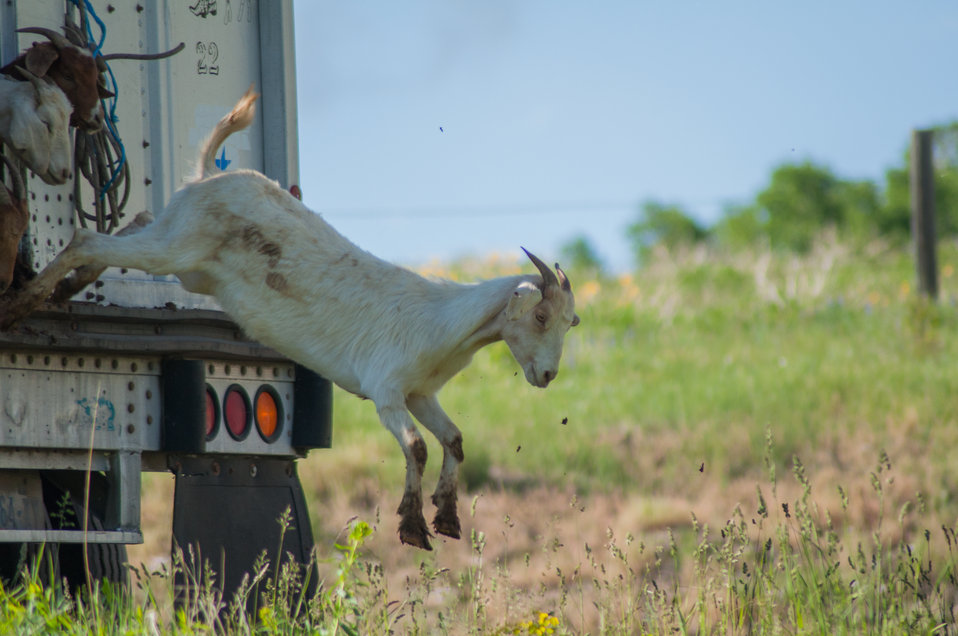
Goat landing on Bozeman Fish Technology Center

On June 8 at 5:00 p.m., 409 yearling domestic goats were off-loaded on the Bozeman Fish Technology Center (BFTC) campus. Thus begins a 3-4 year project of monitored targeted grazing and applications of friendly insects to control noxious weeds and manage brush overgrowth on property of the U.S. Fish and Wildlife Service BFTC.

Purposes of this effort are to reduce the presence of undesirable vegetation, promote restoration of native plants, and assist with fire protection by reducing burnable plant biomass.

The cooperative venture involves the U.S. Fish and Wildlife Service, Montana Outdoor Science School, Friends of the Bozeman Fish Technology Center, Gallatin Valley Land Trust, U.S. Forest Service, and Prescriptive Livestock Services. Integrated Weed Control is supplying the insects as an in-kind contribution to the project, and has applied insects on the BFTC’s 'hot spots' in previous years.